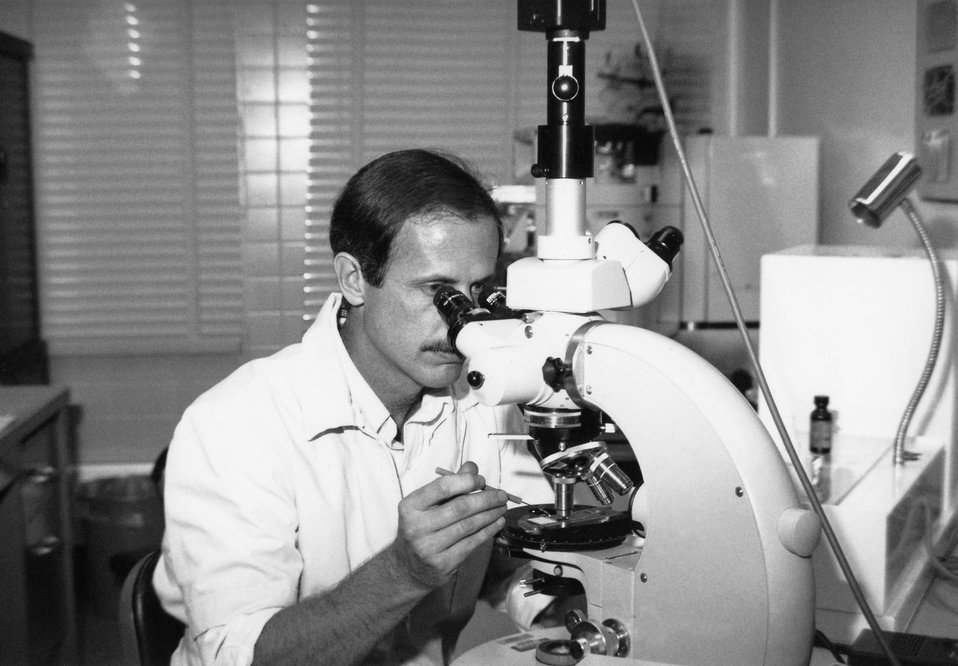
This 1991 photograph depicted a Centers for Disease Control laboratorian as he was positioning a specimen beneath the magnification optics of a microscope during one of CDC's numerous lab studies.